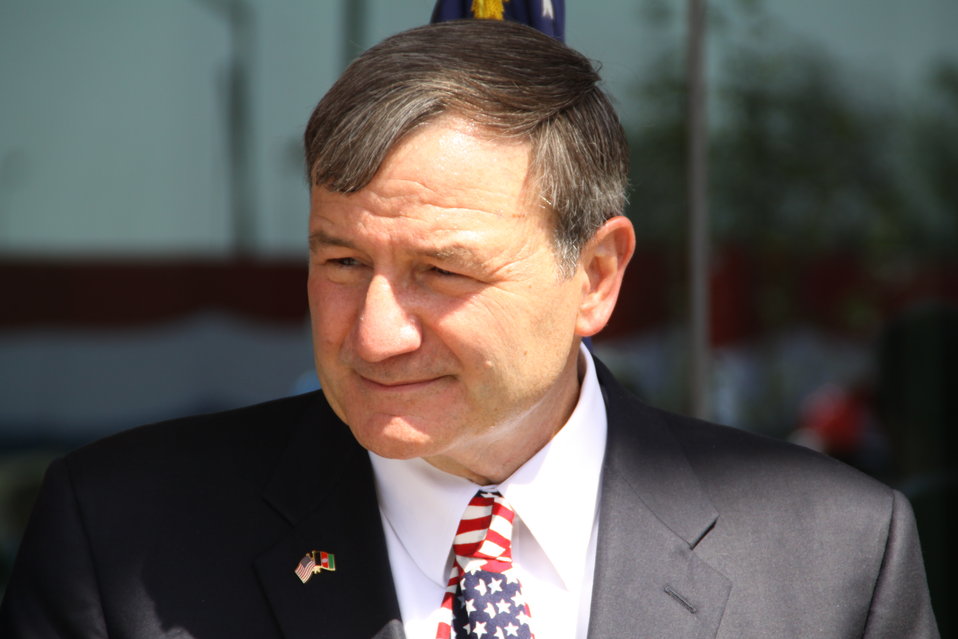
Kabul Official July 4th Celebration